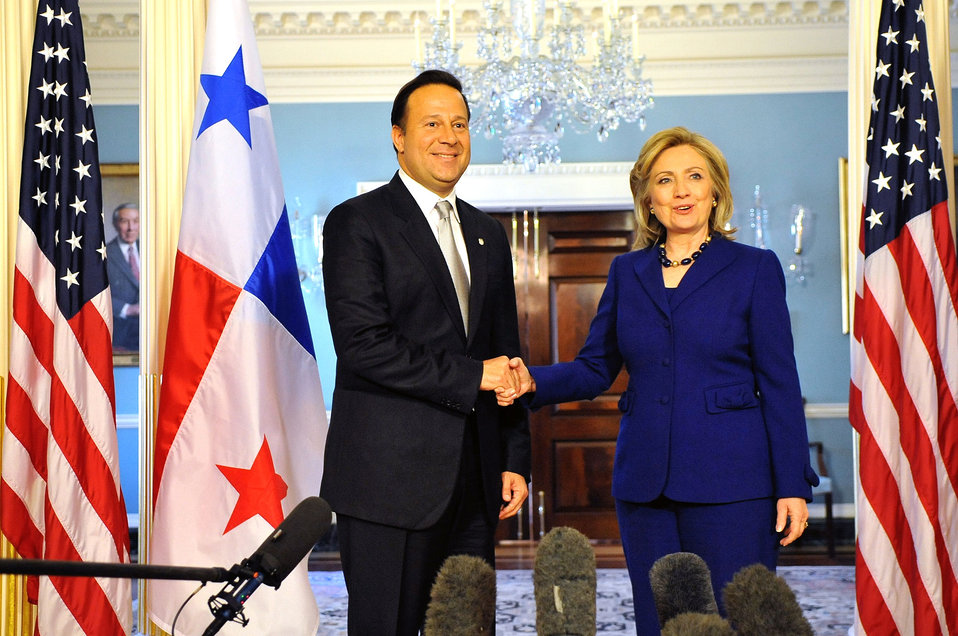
Secretary Clinton Shakes Hands With Panamanian Vice President and Foreign Minister Varela

U.S. Secretary of State Hillary Rodham Clinton shakes hands with Panamanian Vice President and Foreign Minister Juan Carlos Varela before their bilateral meeting at the U.S. Department of State in Washington, D.C., on February 10, 2011.